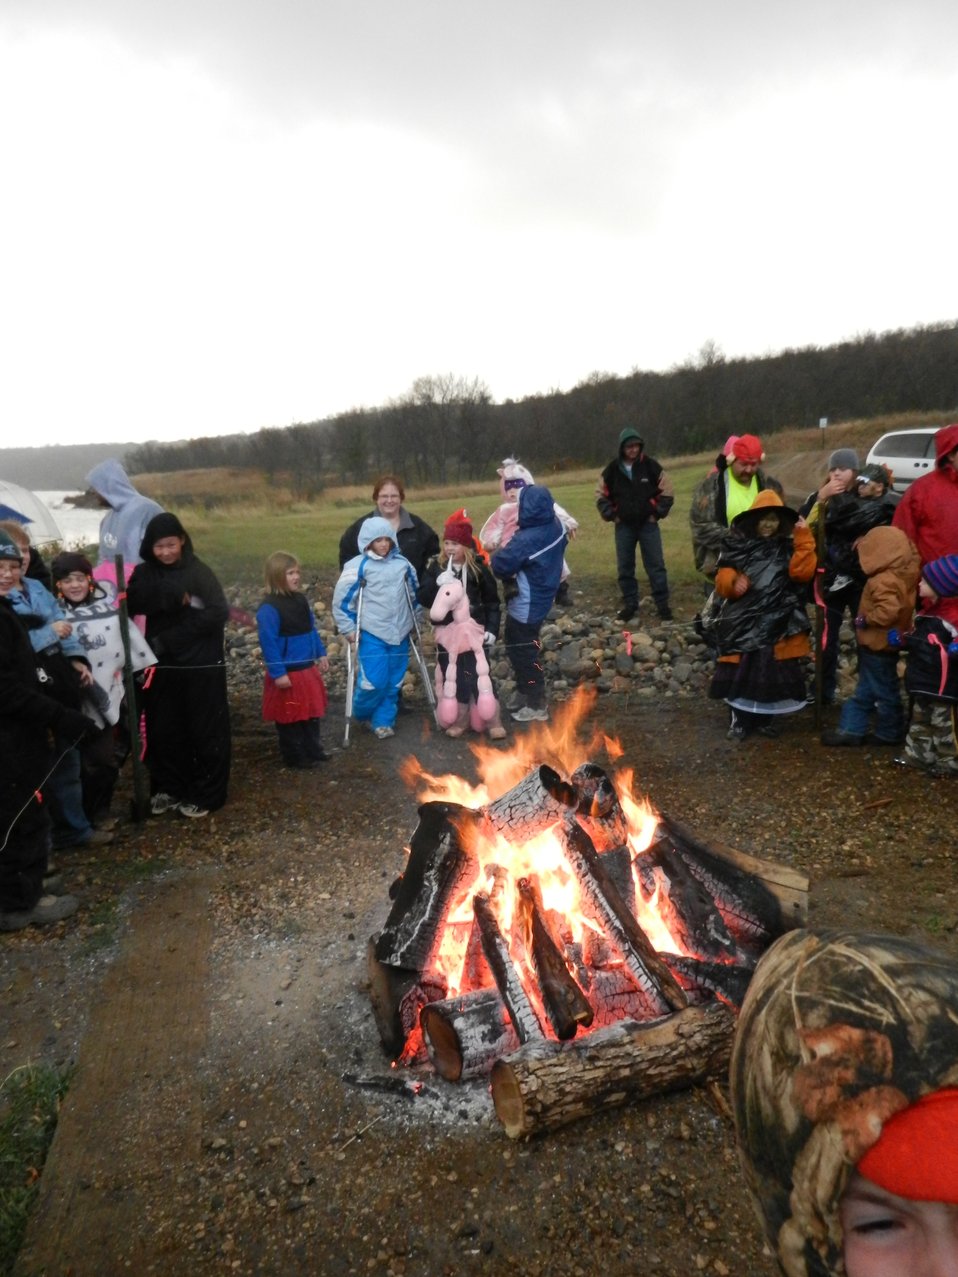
Haunted Hayride

Refuge visitors warm up around the fire during the haunted hayride festivities!